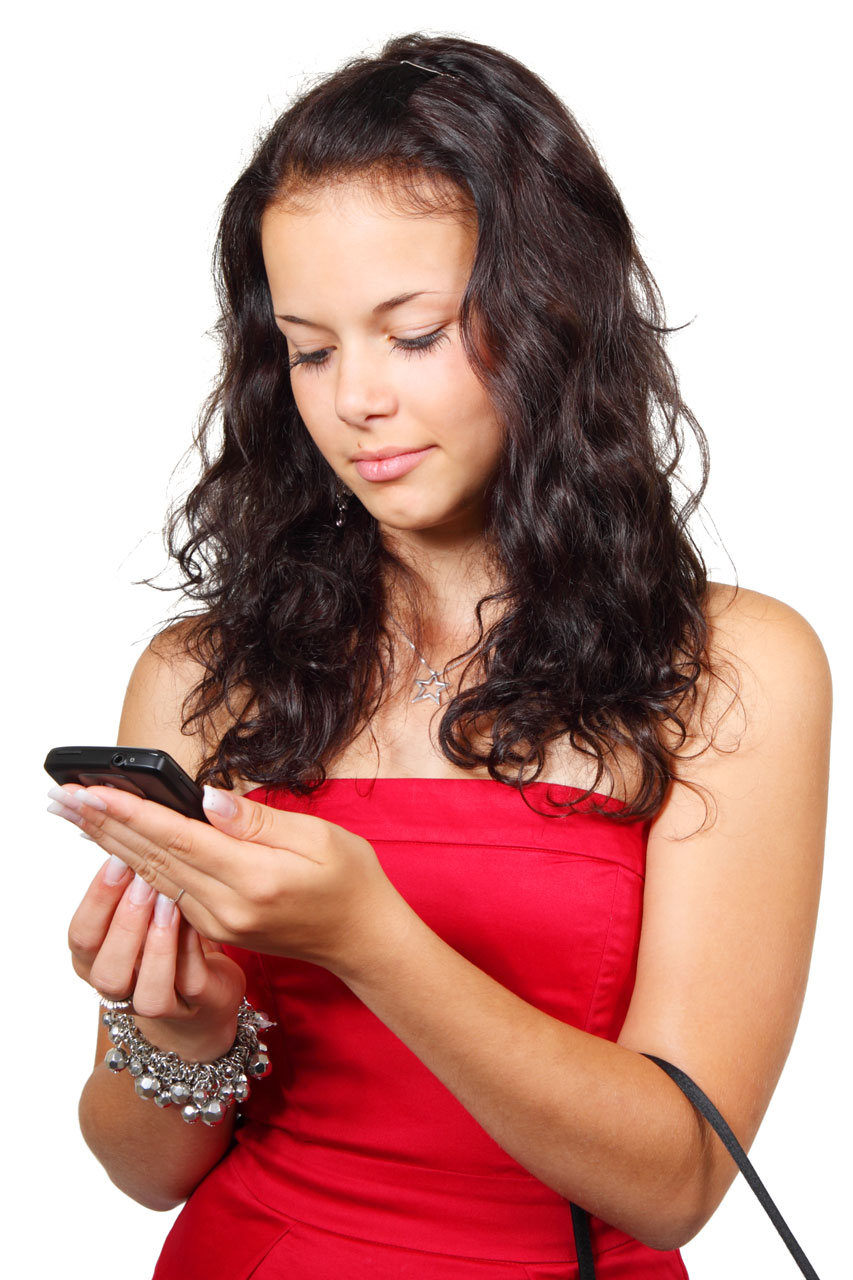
Woman reading sms

Young woman reading a text message.